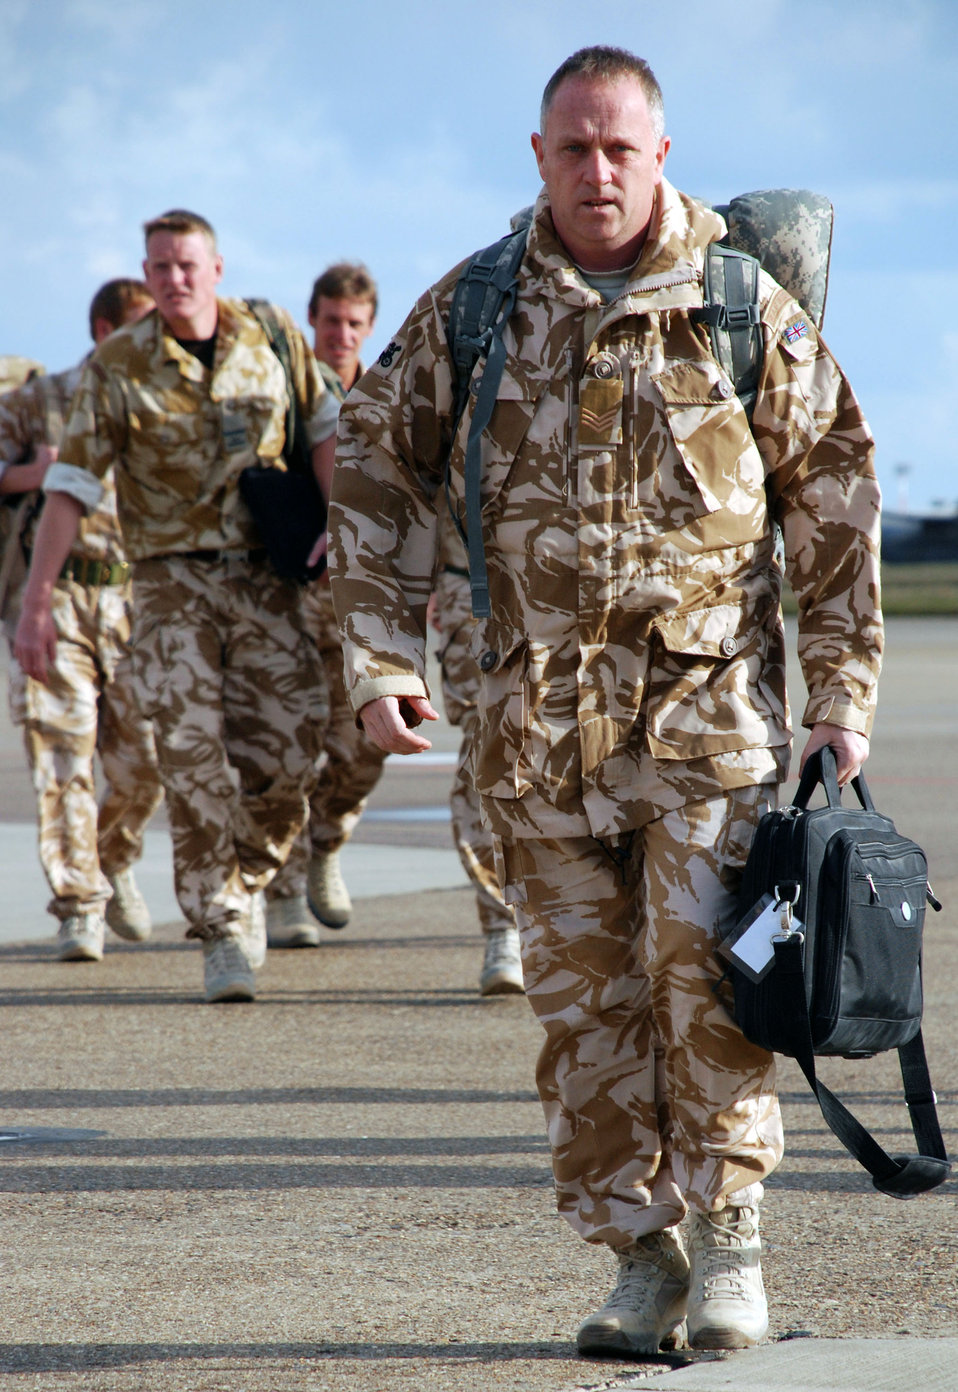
Mildenhall Airmen assist RAF members redeploy

Royal Air Force Sergeant Ady Shaw carries his deployment gear from a military charter plane to the customs area at RAF Mildenhall, England, March 4 after a six-month deployment to Kandahar Air Base, Afghanistan. About 150 RAF servicemembers landed at RAF Mildenhall instead of their typical point of return, shaving about five hours off their journey home to RAF Honington.